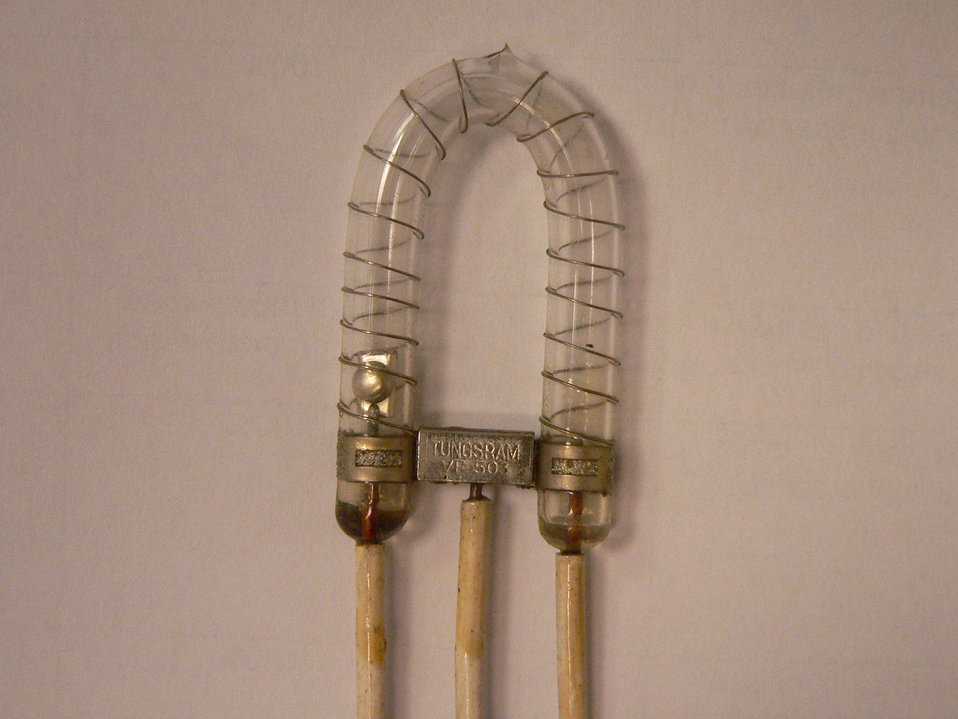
Magyar: Xenon villanólámpa (tetején az ún. szívócső letörve látható)